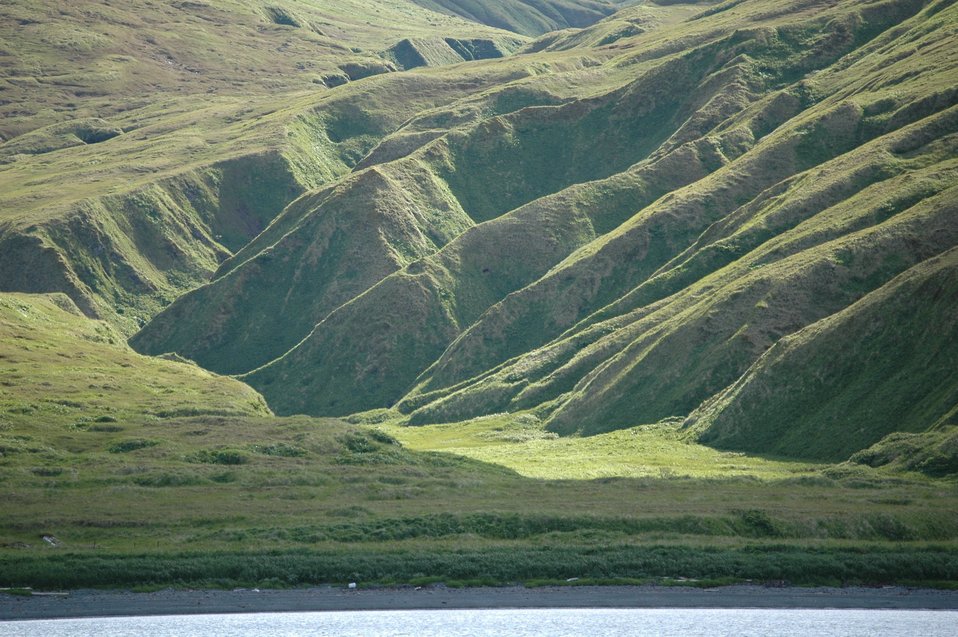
Chichagof Harbor area